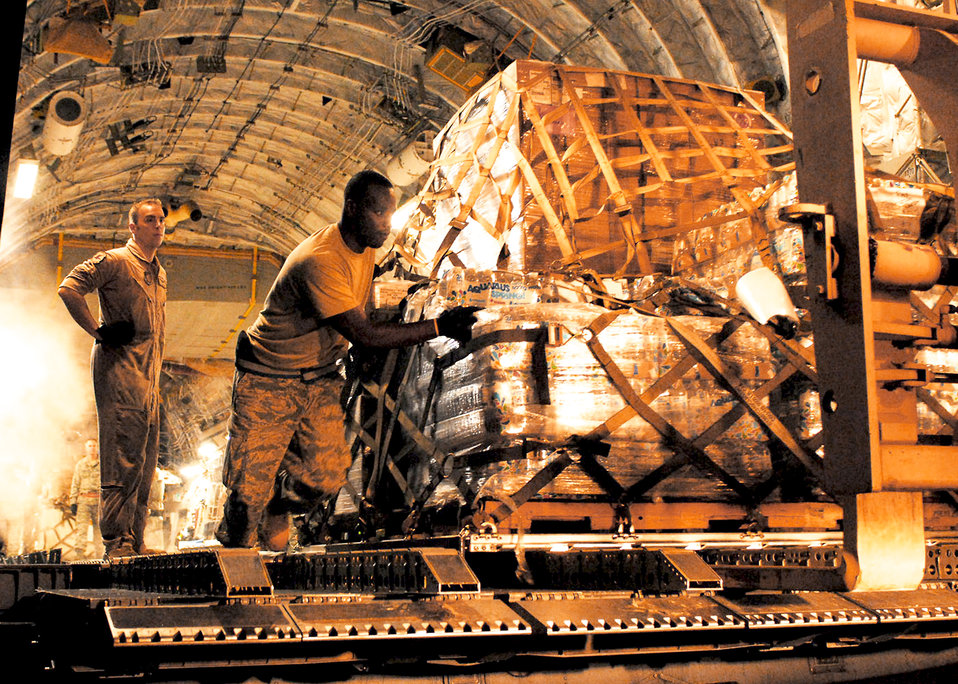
HARRT arrives in Indonesia

Staff Sgt. Brenton Phillips (right) and Staff Sgt. Norm Metz download a pallet of medical supplies from a C-17 Globemaster III Oct. 5, 2009, at Padang, Indonesia. Sergeant Phillips is air transportation specialist with the 36th Mobility Response Squadron at Andersen Air Force Base, Guam, and is deployed here with an Air Force humanitarian assistance rapid response team to provide medical assistance for those affected by the recent earthquake. Sergeant Metz is a 517th Airlift Squadron loadmaster from Elmendorf AFB, Alaska.